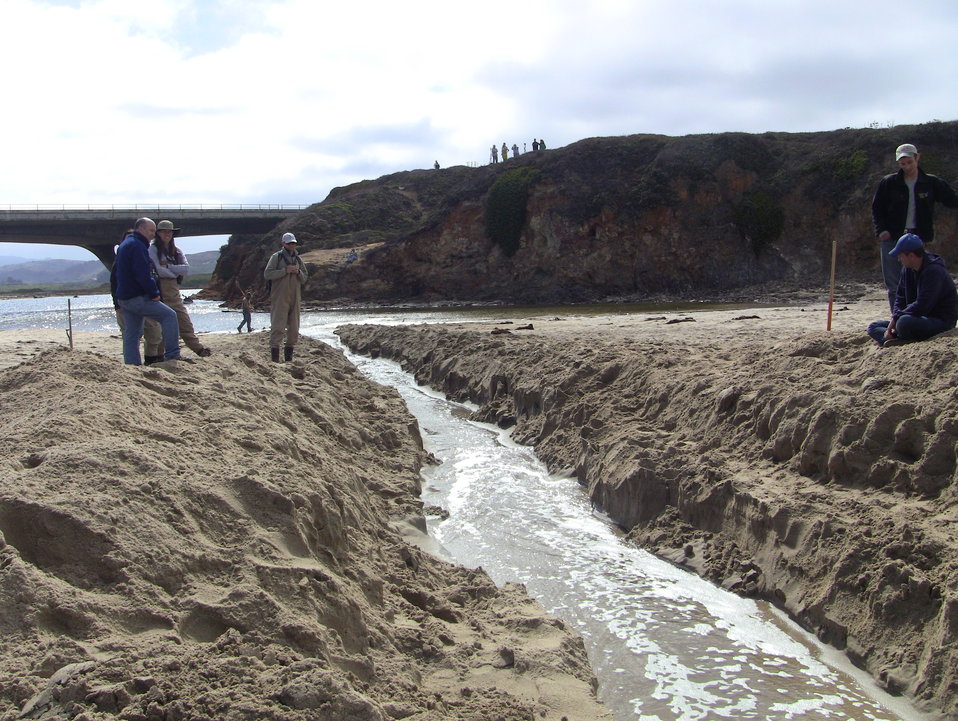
Pescadero Breach17